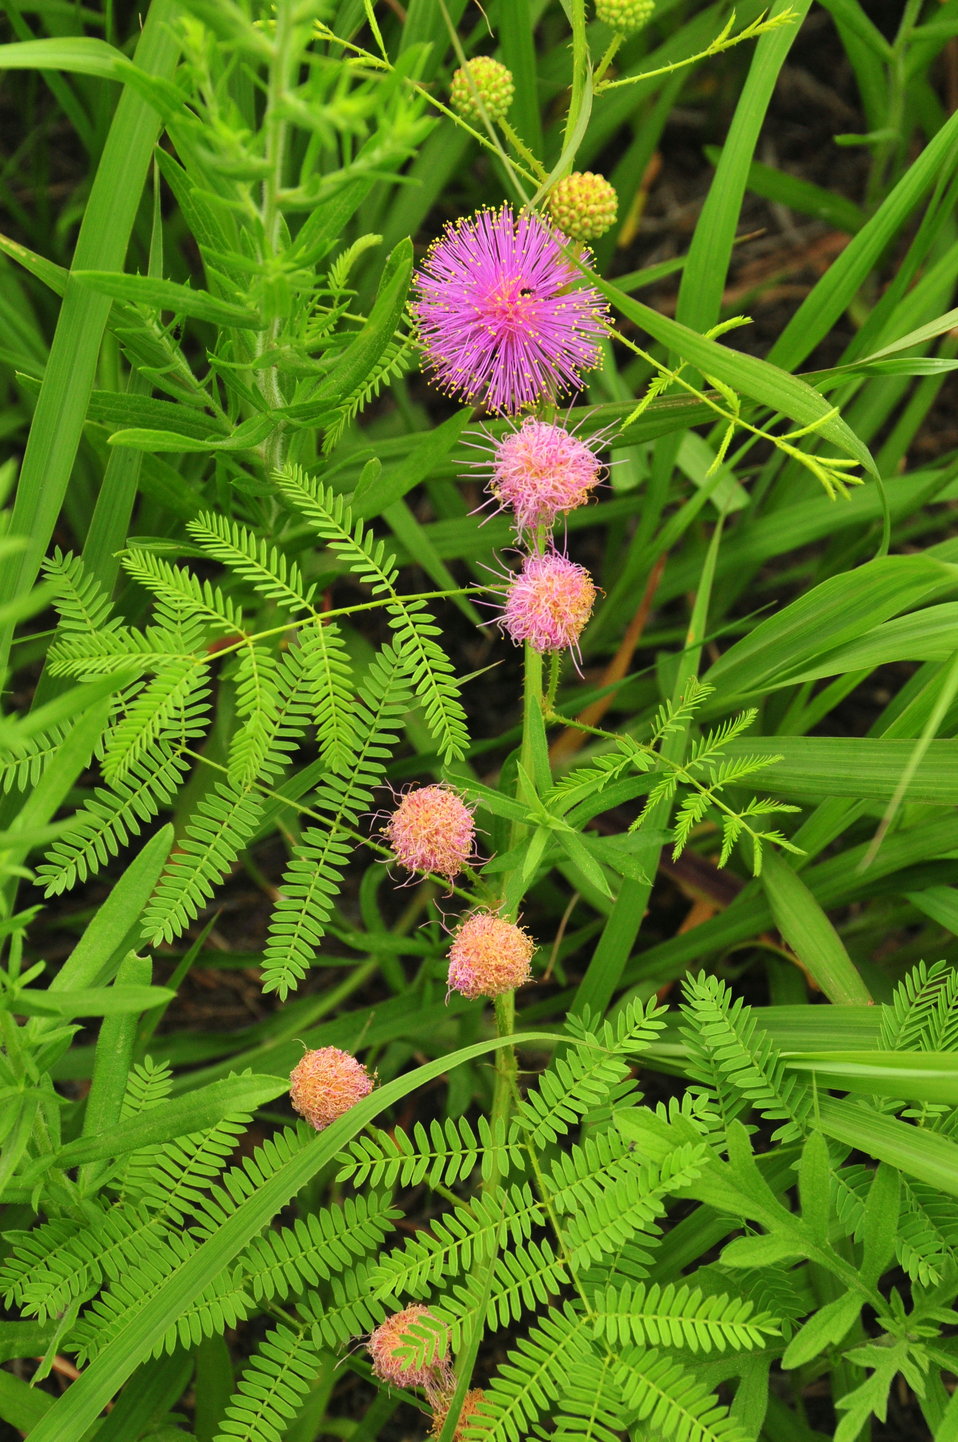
Catclaw sensitive briar (Mimosa nutallii) Lake Andes WMD. Catclaw sensitive briar is very nutritious for livestock, which will seek it out. It is an important indicator of range condition, decreasing when overgrazed.
The leaflets are sensitive to touch and will fold together when disturbed. The leaves also fold at night or on dark cloudy days. This unusual habit of folding leaves on windy and cloudy days and at night is believed to be a water conserving adaptation. It is found in native prairies in portions of South Dakota, Nebraska, and Kansas in Region 6.